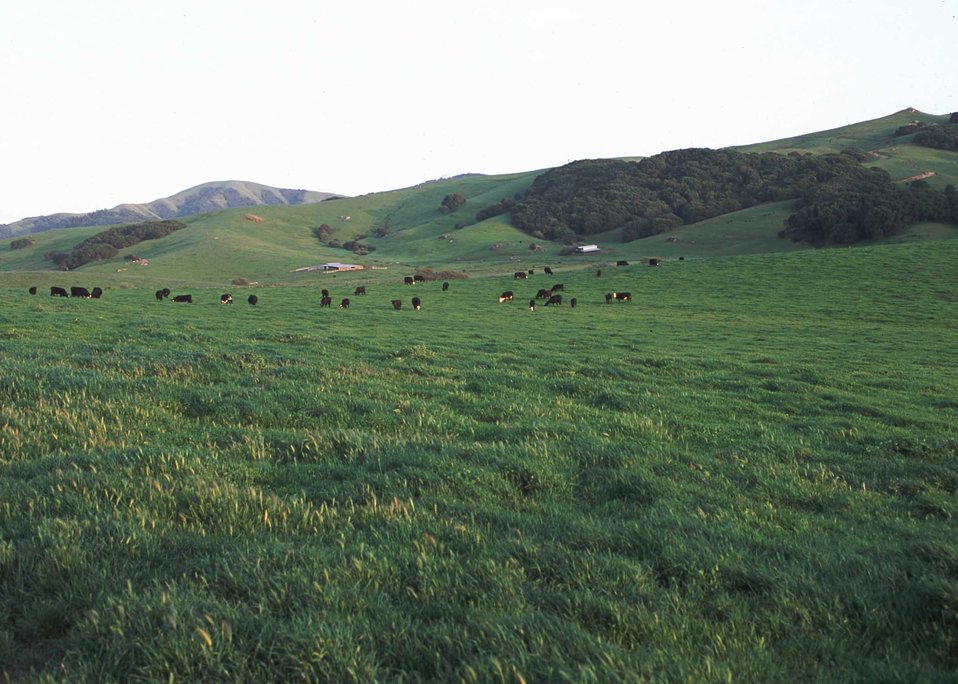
Rangeland in Sonoma County, CA.